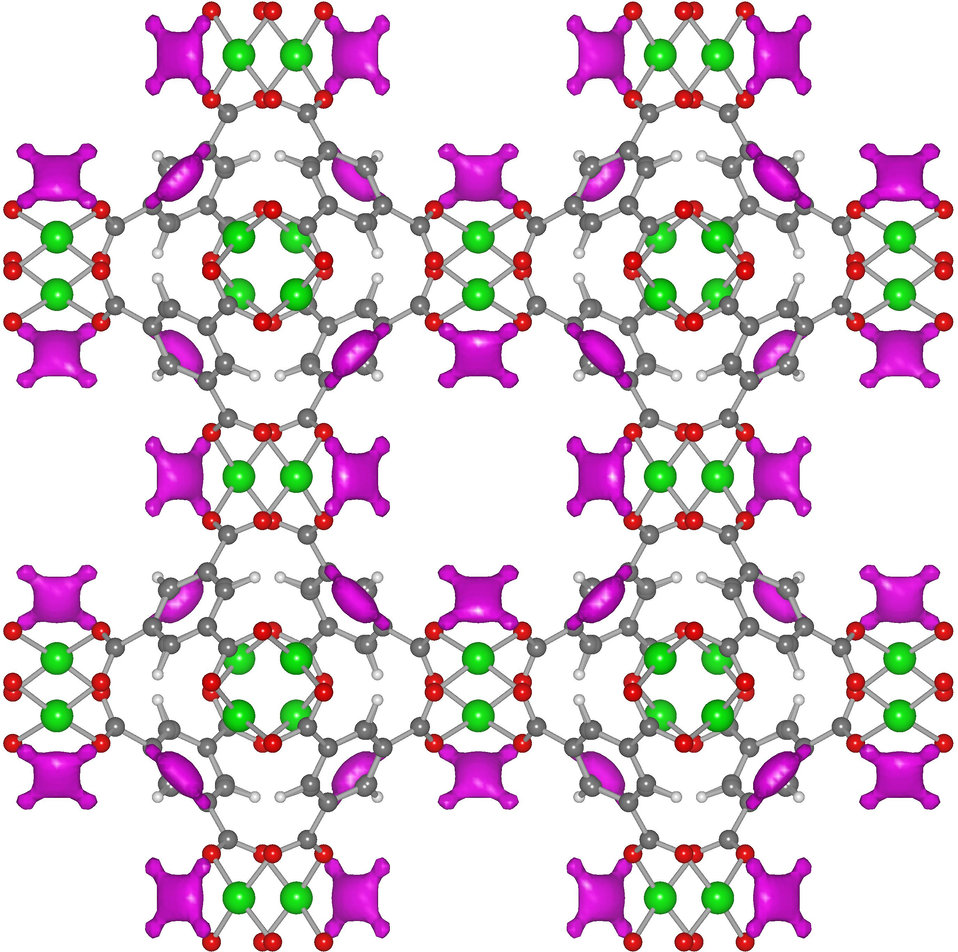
Acetylene Storage

This closeup image of the HKUST-1 metal-organic framework (MOF), recently obtained by NIST scientists, reveals that copper atoms (green) are exposed to the open air within the MOF's lattice-like structure. The exposed copper allows the MOF to safely store acetylene (magenta) at up to 100 times current capabilities.